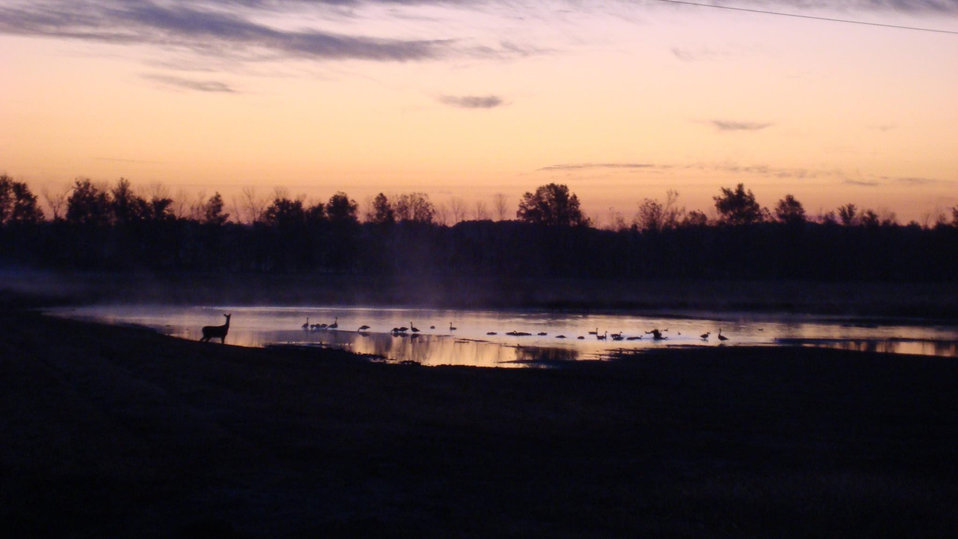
sunset at Cypress Creek NWR

Cypress Creek National Wildlife Refuge, IL
Nov. 2011